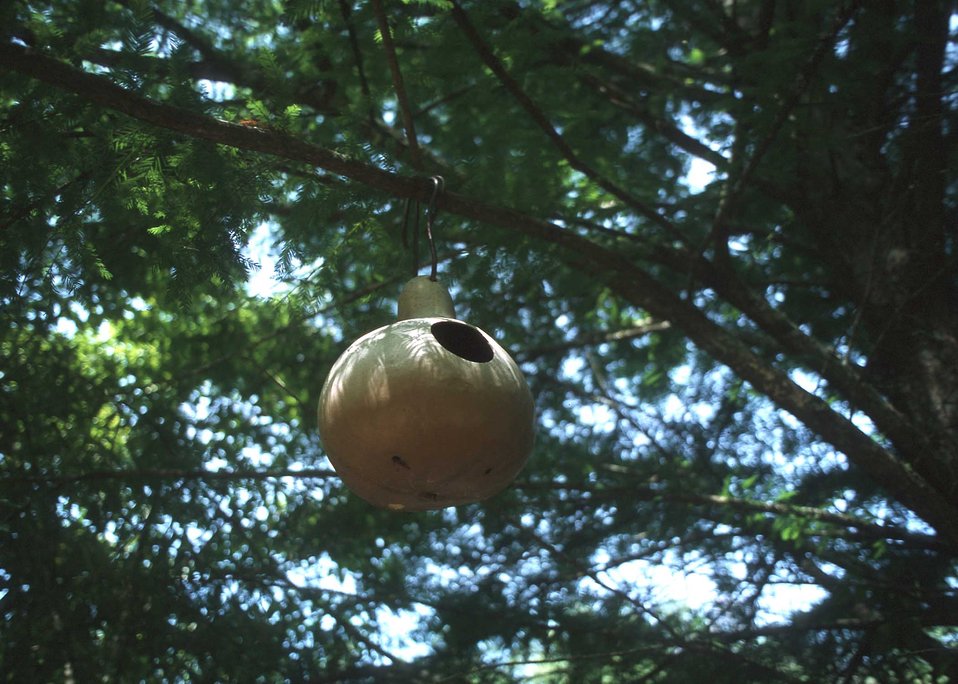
Gourds make an excellent home for cavity dwelling birds and are easy to make.